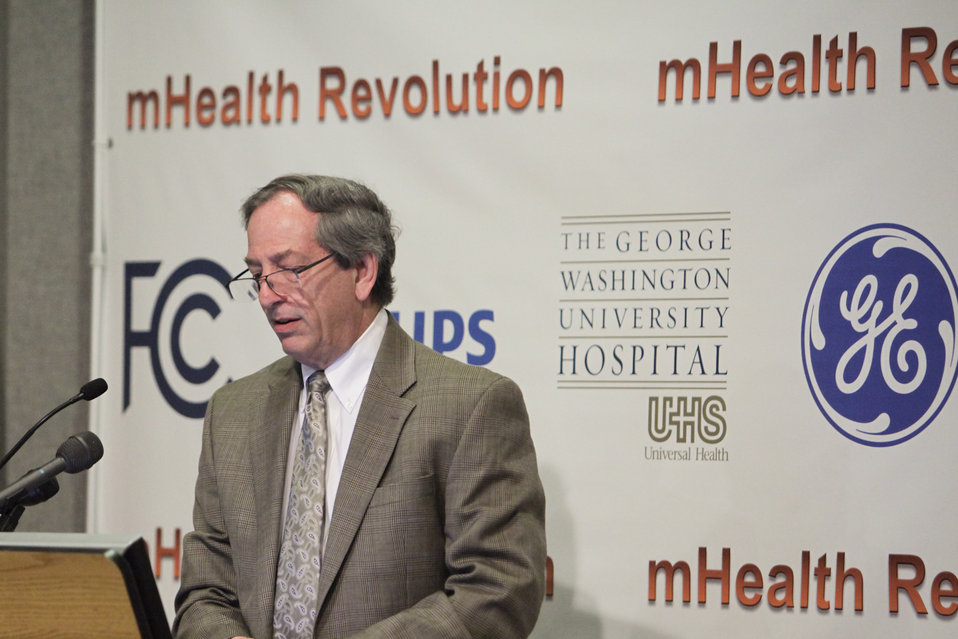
Richard J. Katz, MD Speaks at GW University Hospital About MBANs

Richard J. Katz, MD, Director, Division of Cardiology, George Washington University Hospital speaks about MBAN at George Washington University Hospital in Washington, DC.

May 17, 2012.